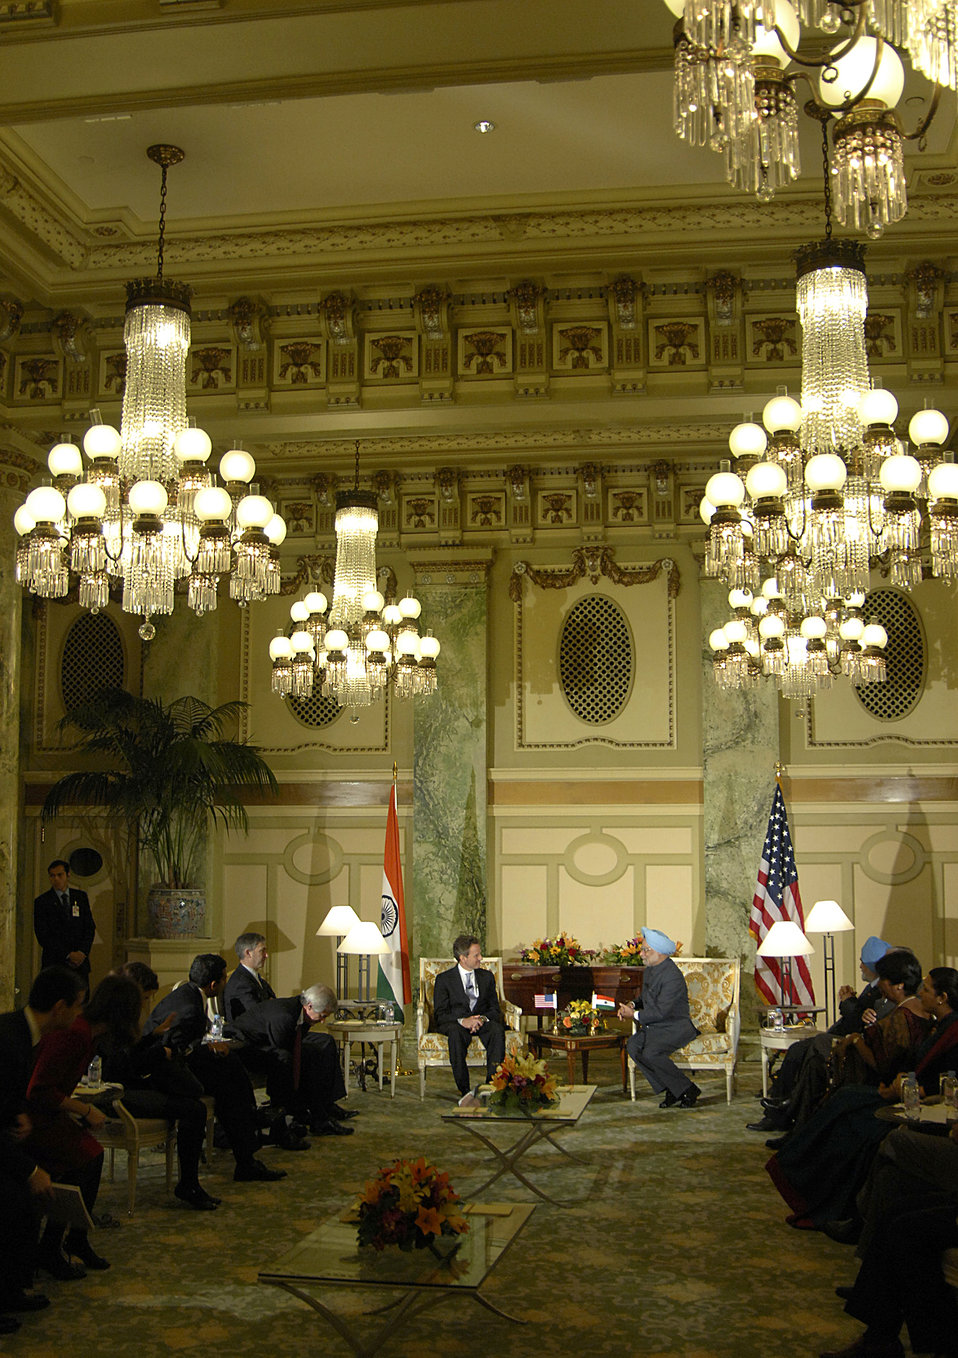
Prime Minister Singh of India

On November 25, 2009, Secretary Geithner participated in a bilateral meeting with Prime Minister Singh of India.